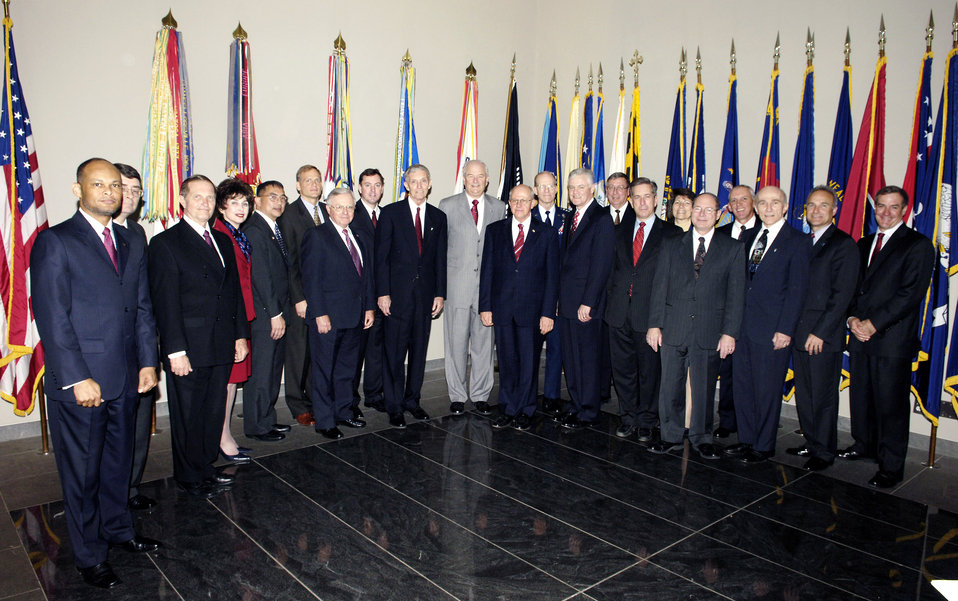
Air Force civilians win 2006 Presidential Rank Awards

Secretary of the Air Force Michael Wynne, center, stands with the 2006 Presidential Rank Award recipients after a ceremony held April 20 at the Women's Memorial in Arlington National Cemetery in Washington D.C.